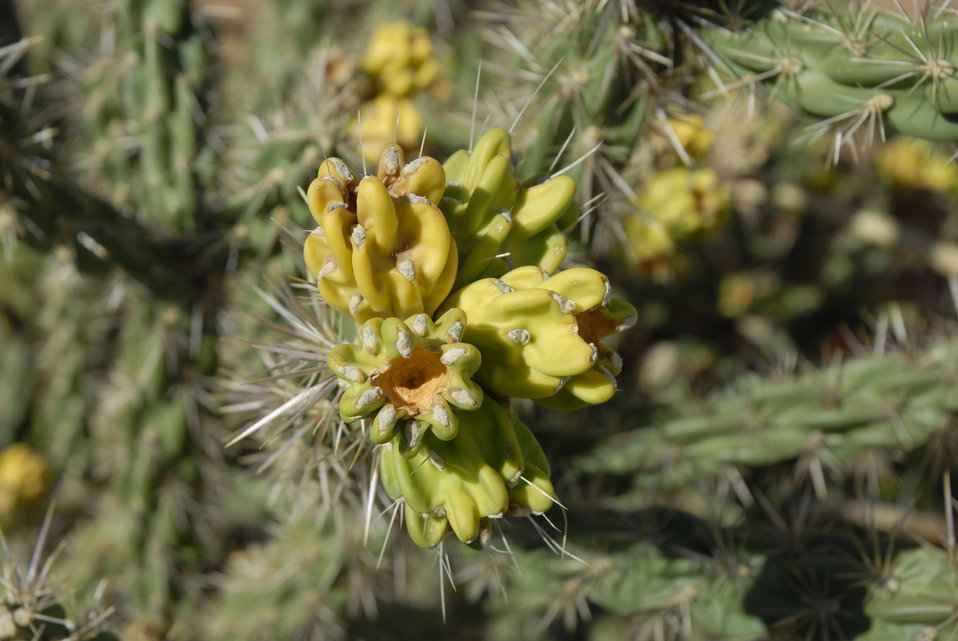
A cactus plant grows in Albuquerque, New Mexico on September 8, 2008.